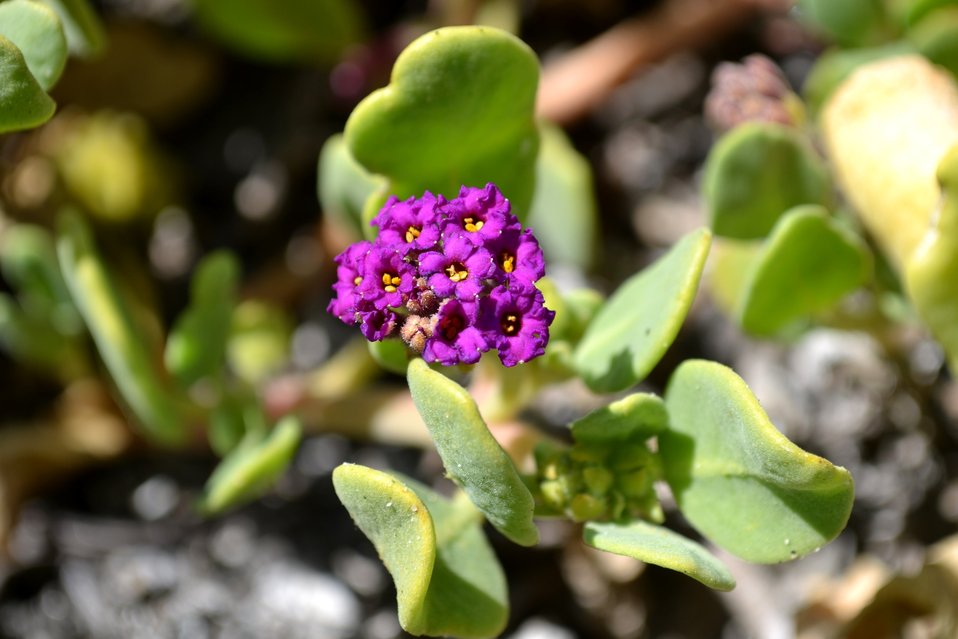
Red sand verbena (Abronia maritima)

A native dune species, this beautiful flower blooms from February to October.